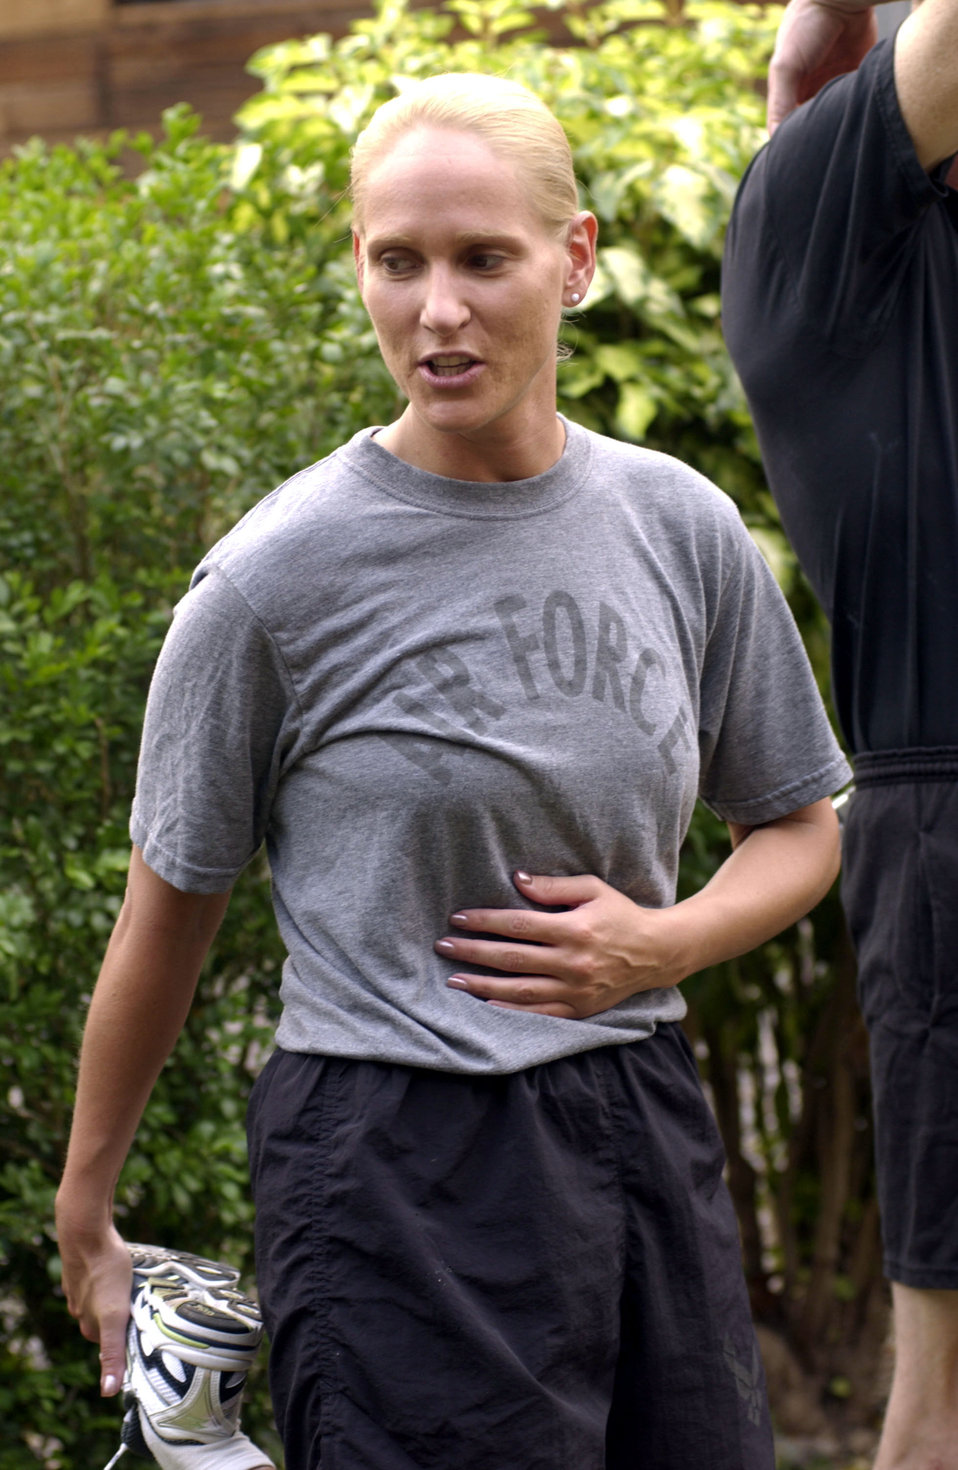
Lieutenant leaves 'footprint' at Soto Cano

SOTO CANO AIR BASE, Honduras -- First Lt. Kellie Courtland stretches before her daily run. The lieutenant set a goal of running 1,500 miles before she leaves here. She said running in the extreme heat and humidity has helped her train for competing in the states. She has completed four marathons while serving as the officer in charge of the subarea petroleum office for Joint Task Force-Bravo.